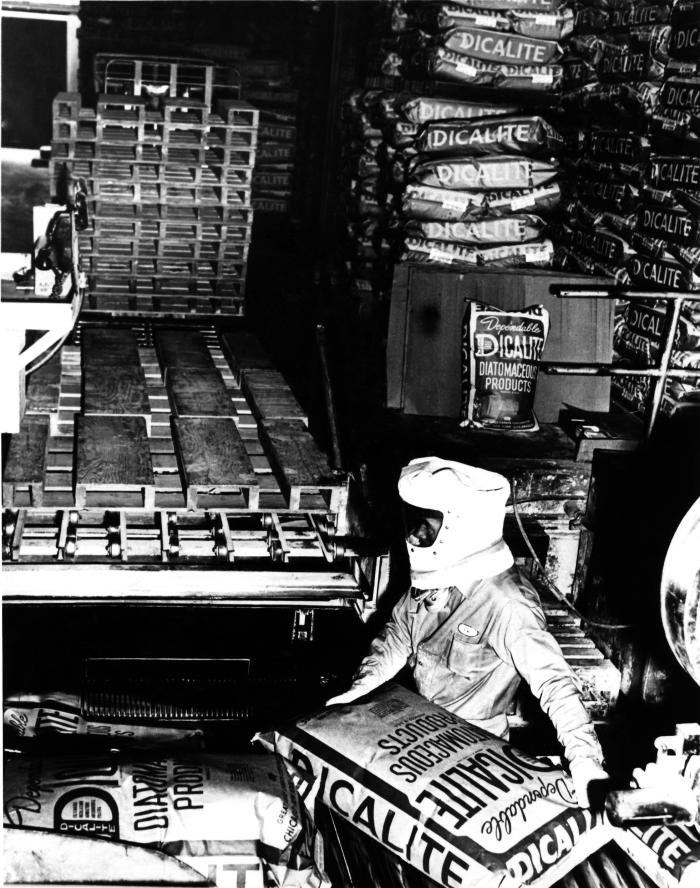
This 1958 historical photograph was provided by the Center for Disease Control's (CDC), National Institute for Occupational Safety and Health (NIOSH), and depicted a worker in Lompoc, California, handling bags of diatomaceous earth while wearing protective clothing. The image originally appeared in a U.S. Public Health Service Publication No. 601, in an article entitled,'Pneumoconiosis in Diatomite Mining and Processing', 1958. Inhaled dust or other airborne particulate materials containing silica that is deposited in the lungs, will cause the lung tissue to react by creating generalized nodular fibrotic changes, and is known as 'pneumoconiosis', which is also know an pneumosilicosis, or 'grinders' disease'.In gaining a better understanding of workplace hazards, protocol-formulating bodies such as NIOSH, are better able to create a safer workplace through substantiation of appropriate safety regulations.